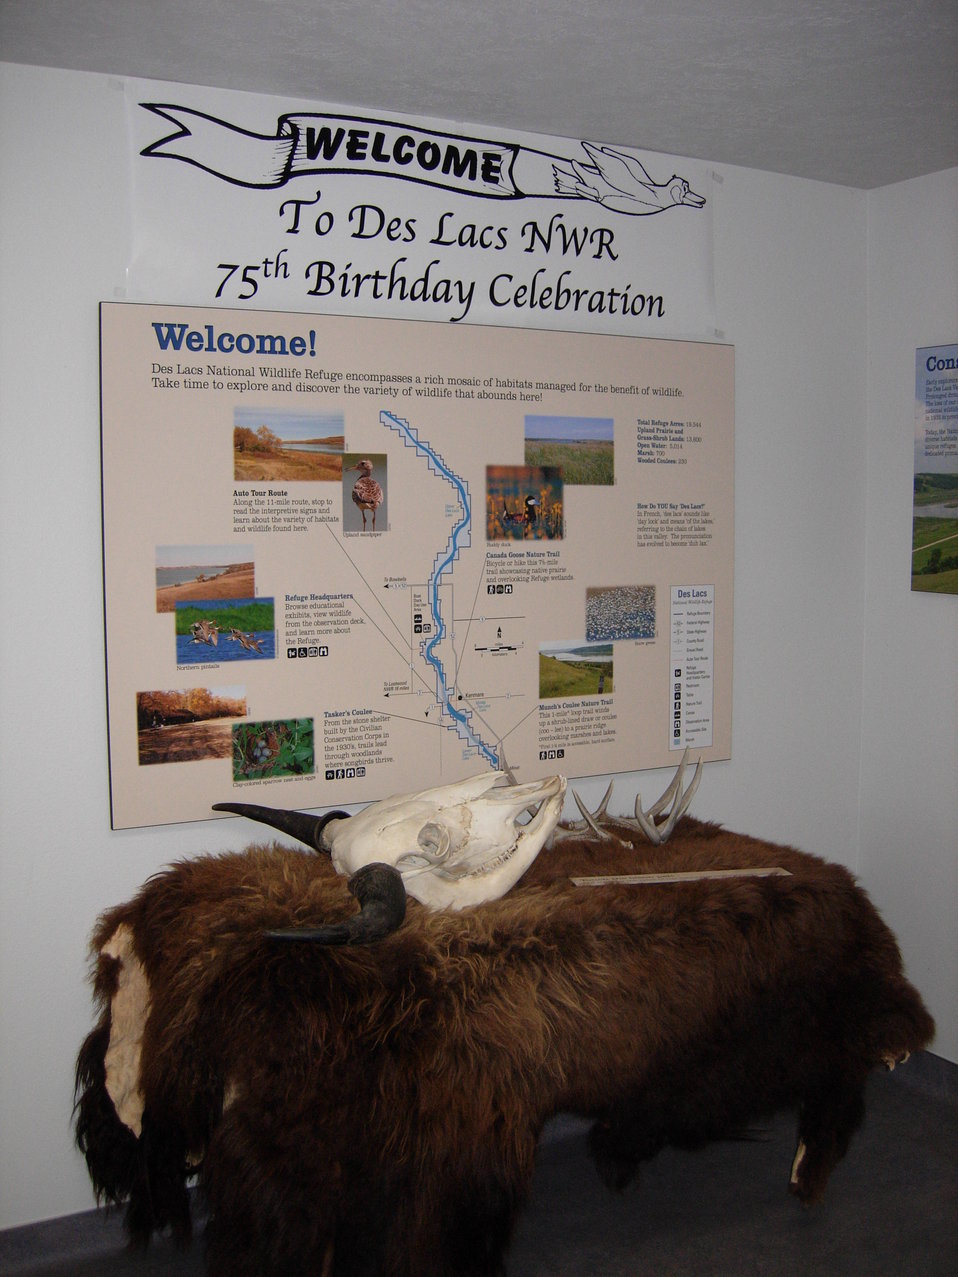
Welcome Banner

Visitors were able to see Des Lacs National Wildlife Refuge's newly remodeled visitor center including the new interpretive panels for Des Lacs National Wildlife Refuge 75th birthday celebration.